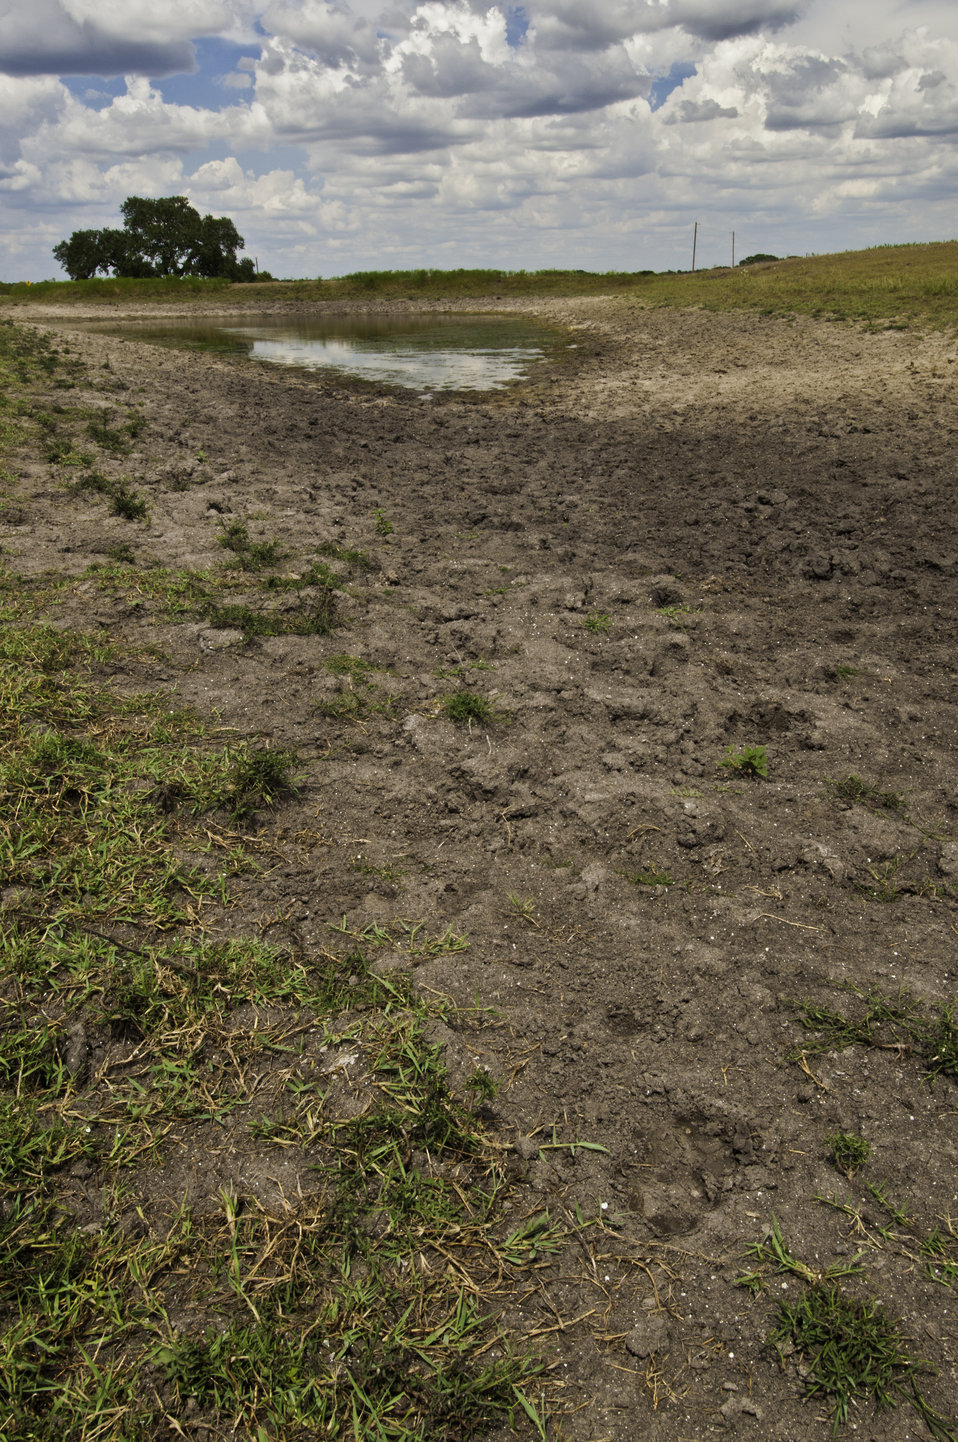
Dry livestock tanks show the effect of drought in Schulenberg, TX on Aug. 23, 2013.